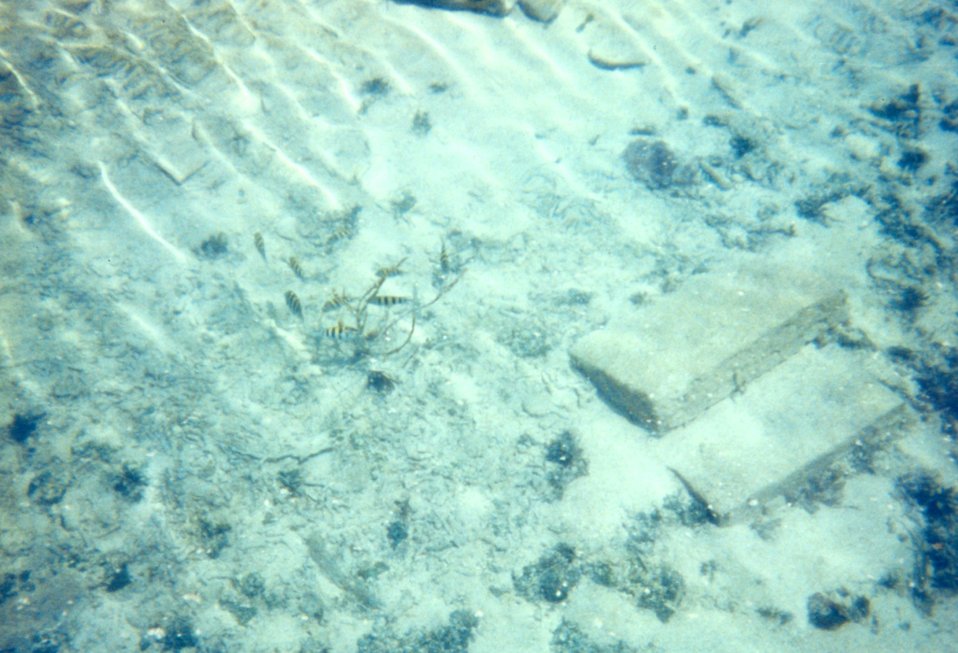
Sun reflections and sea life in the moat at Fort Jefferson